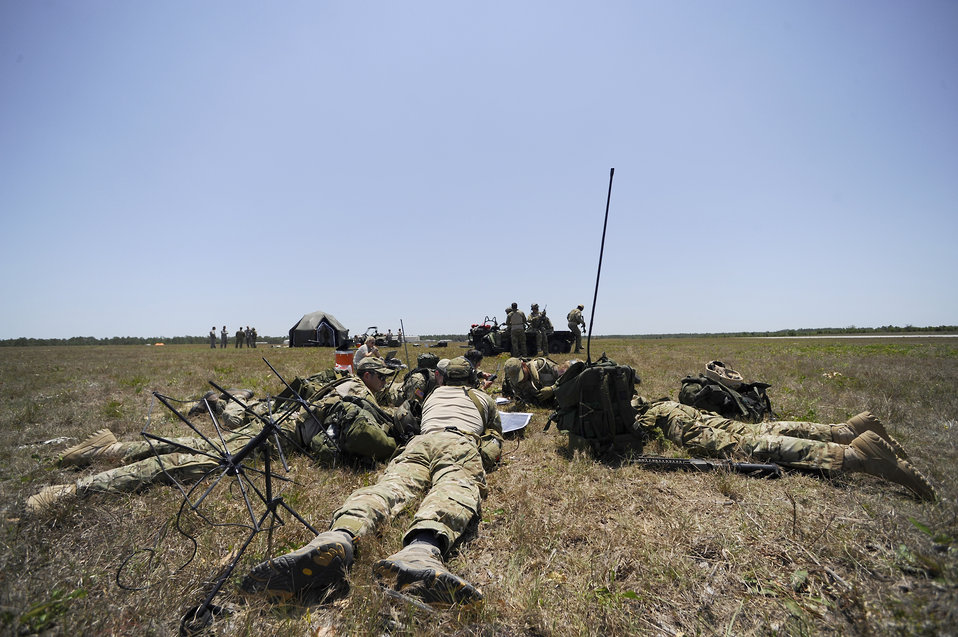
Operations Nimble Response

Special-tactics personnel rally to discuss the next course of actions during a simulated disaster May 11, 2011, during Exercise Operation Nimble Response, at Eglin Air Force Base, Fla. Operation Nimble Response is an exercise to hone humanitarian and disaster relief efforts. Close to 50 personnel from Head Quarters Air Force Special Operations Command, 1st Special Operations Wing, and 280th Combat Communications Squadron, in coordination with USAID, worked together to improve disaster response.